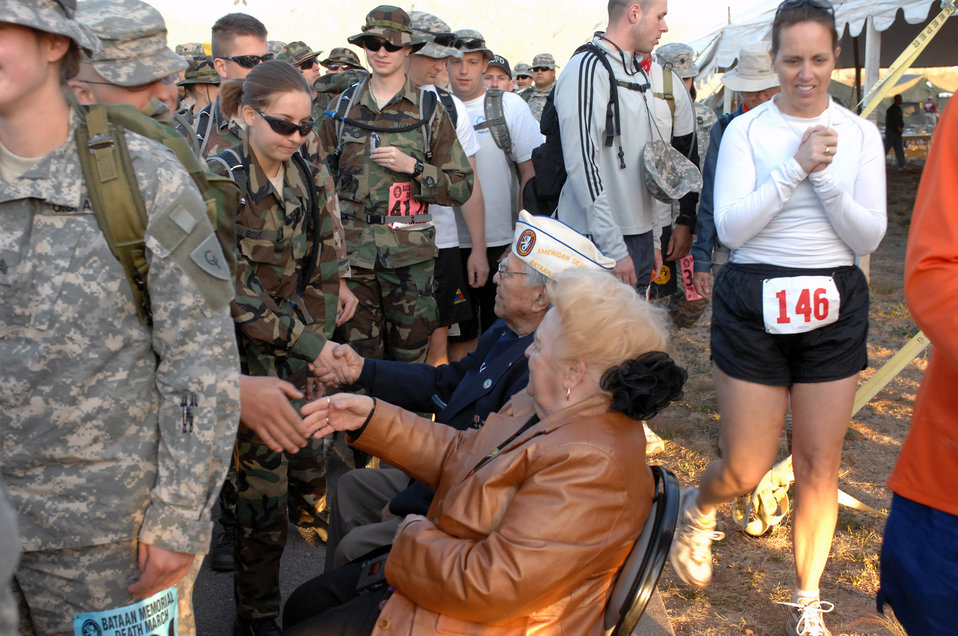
Cannon members march to honor Bataan POWs

Bataan Death March survivor Carlos Montoya shakes hands with some of the more than 4,400 participants in the 19th Annual Bataan Memorial Death March March 30 at White Sands Missile Range, N.M. Military units from all 50 states as well as more than a dozen foreign countries gathered to honor the men who endured the death march in 1942 and prisoner of war hardships until 1945.